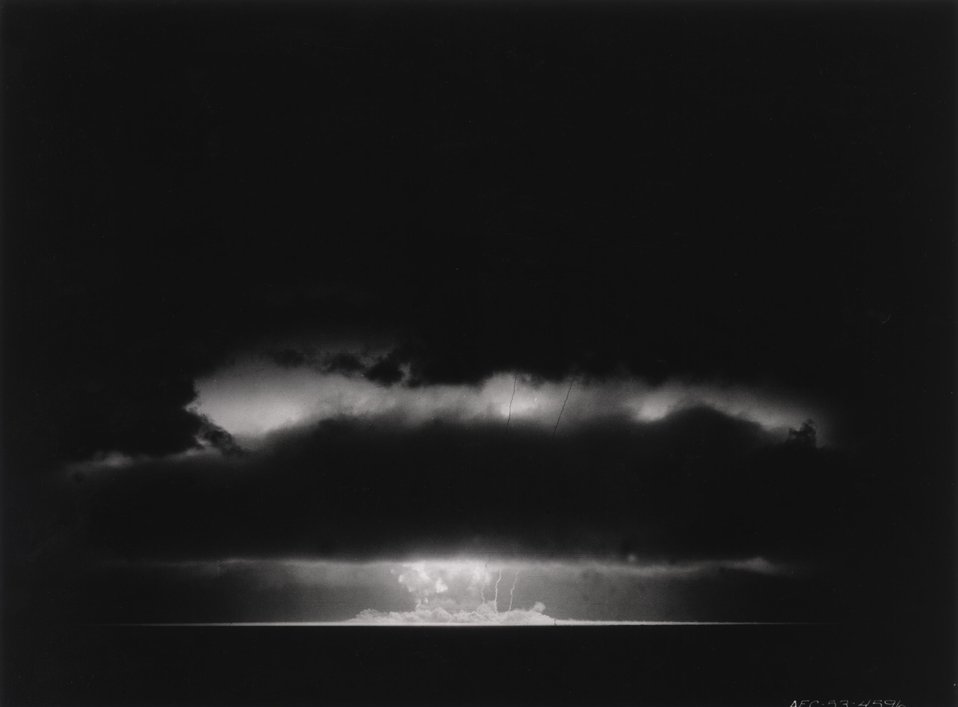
A nuclear detonation during the 1951 spring tests at Eniwetok Atoll is shown with smoke trails from rockets designed to capture sample materials.